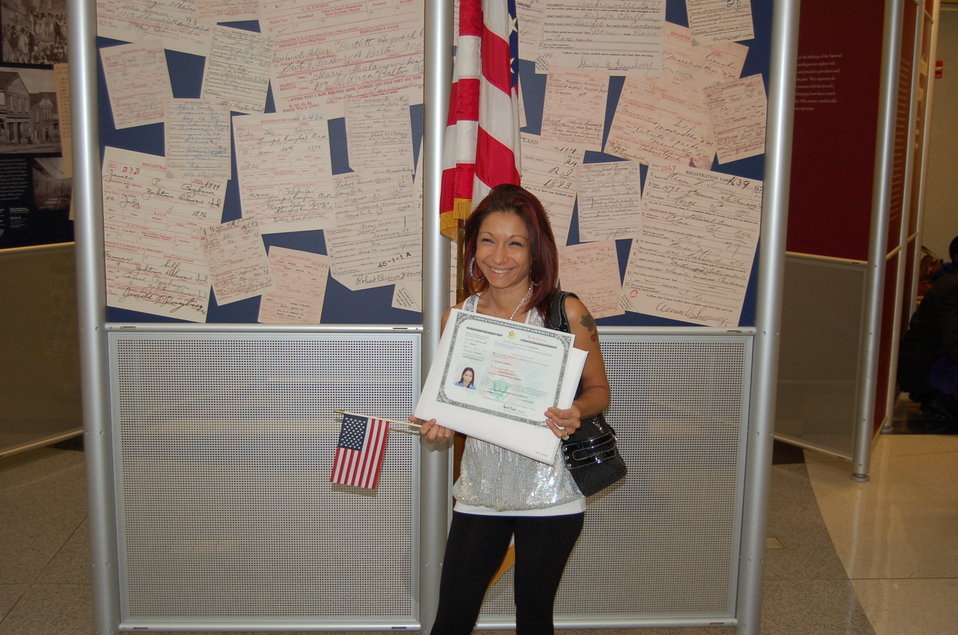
New Citizens